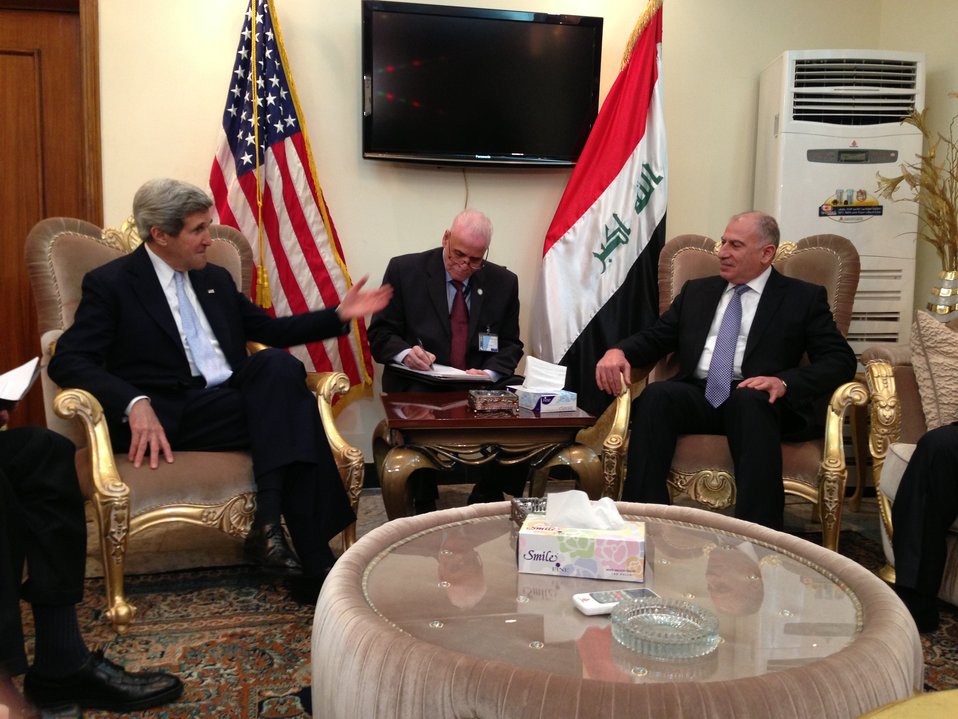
Secretary Kerry Meets With Iraqi Council Speaker al-Nujayfi

U.S. Secretary of State John Kerry meets with Iraqi Council of Representatives Speaker Usama al-Nujayfi in Baghdad, Iraq on March 24, 2013.